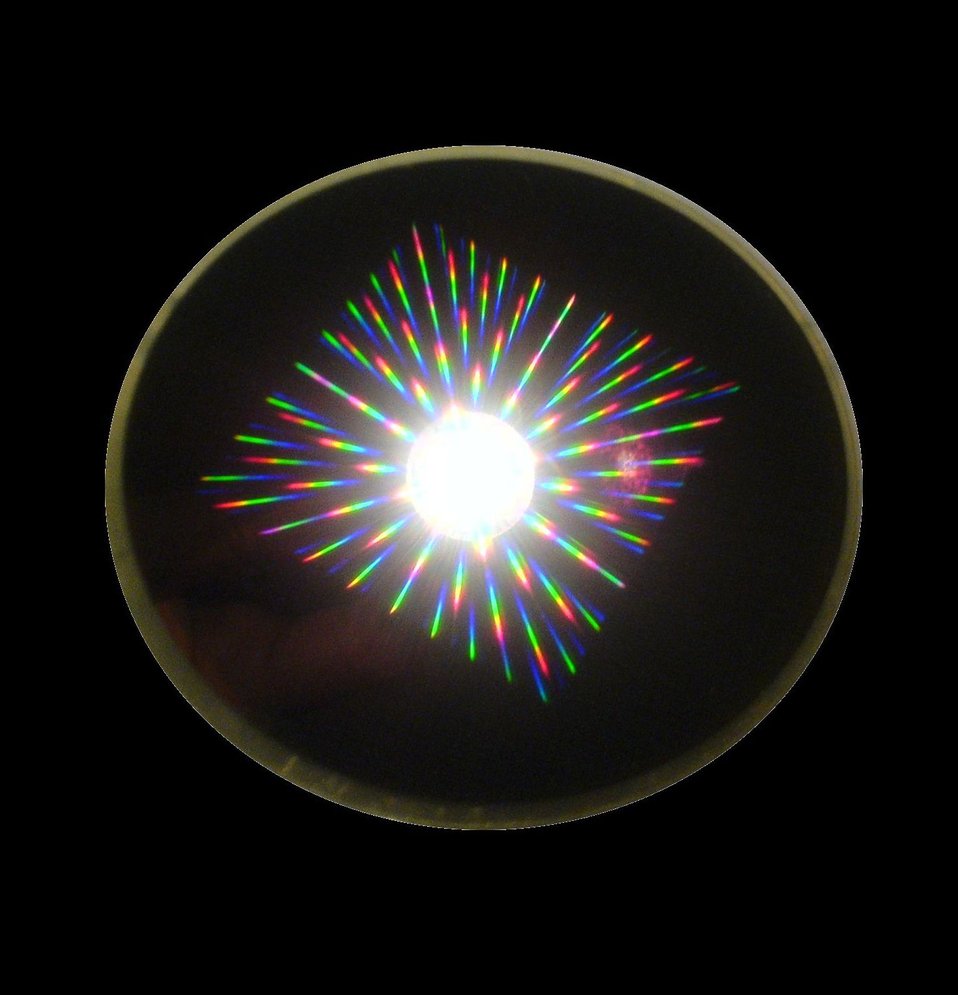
Microscopic magnets

The image shows light scattering from grids of magnets on a wafer where they were made using conventional microfabrication techniques.